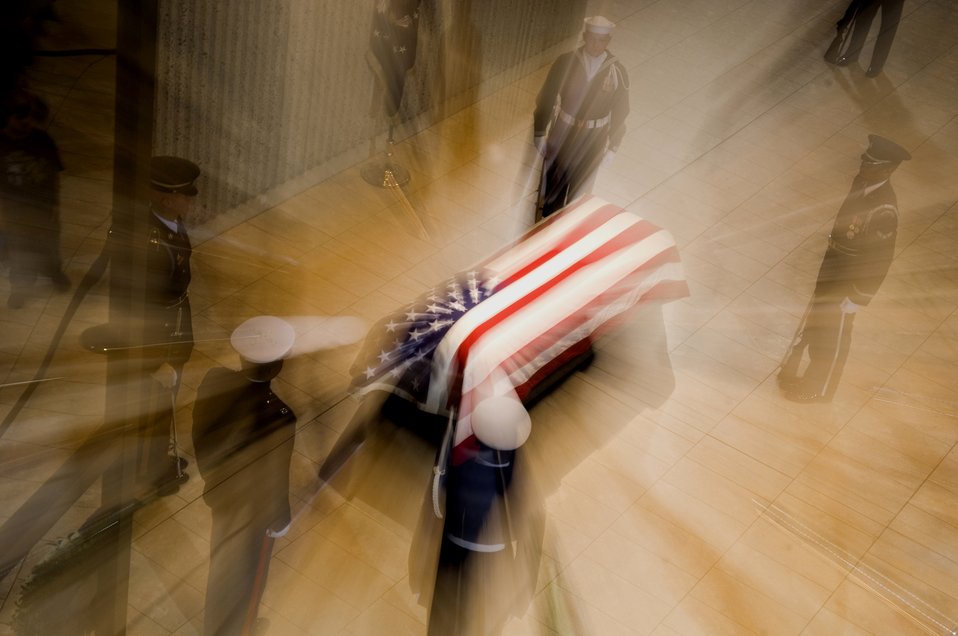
Honor Guard gives President Ford final honors

President Gerald R. Ford's body lays in repose while the Guard of Honor stands in formation at the Gerald R. Ford Presidential Library and Museum Jan. 2 in Grand Rapids, Mich.